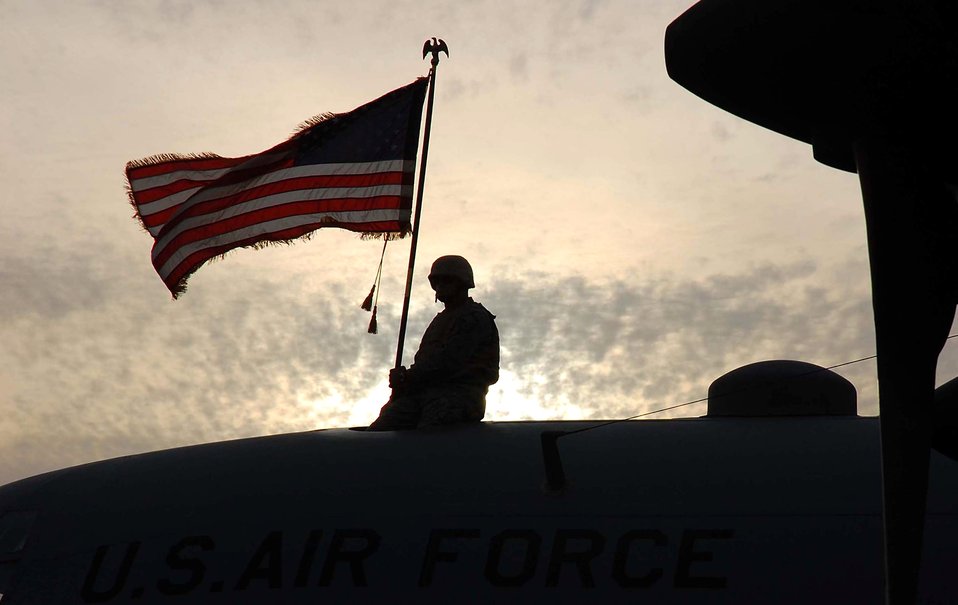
A warrior retires

Master Sgt. Roger Richardson holds an American flag atop a C-130 Hercules Nov. 13 that has just completed its last combat mission in Southwest Asia and now will be retired. Sergeant Richardson is a crew chief with the 386th Expeditionary Aircraft Maintenance Squadron.